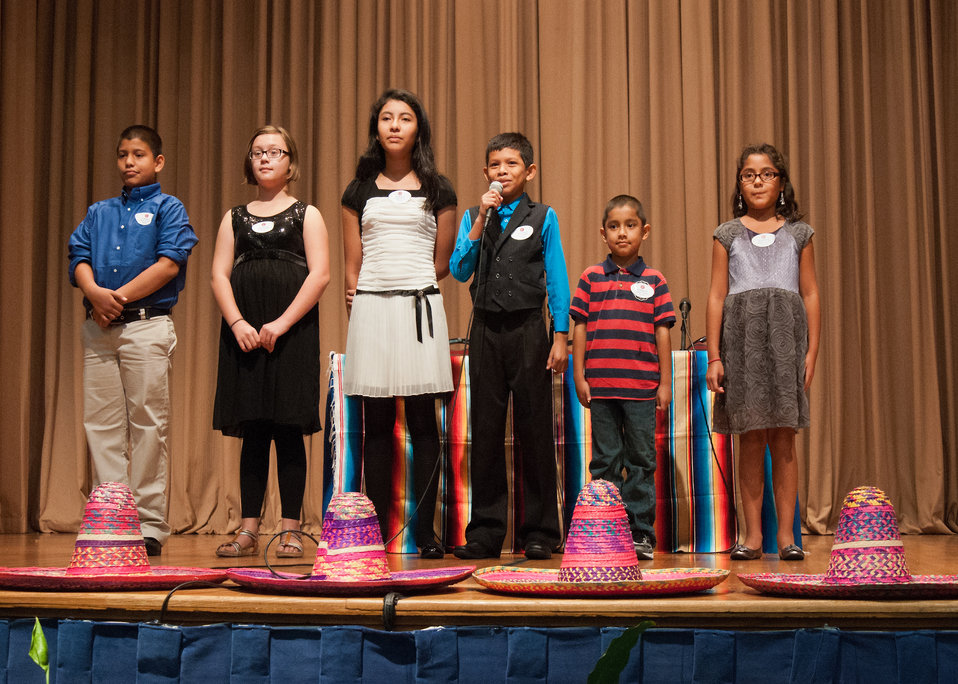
(L to R) District of Columbia Bilingual Public Charter School students Christopher Aguilar, Siena Olero, Marta Moreno, Josue Sorto-Ramos, Bryan Henriquez and Sophia Elescano speaks about the healthy and nutritional qualities at their school at the U. S. Department of Agriculture (USDA) 2012 Hispanic Heritage Month celebration in Washington, D.C. on Thursday Sept. 20, 2012.